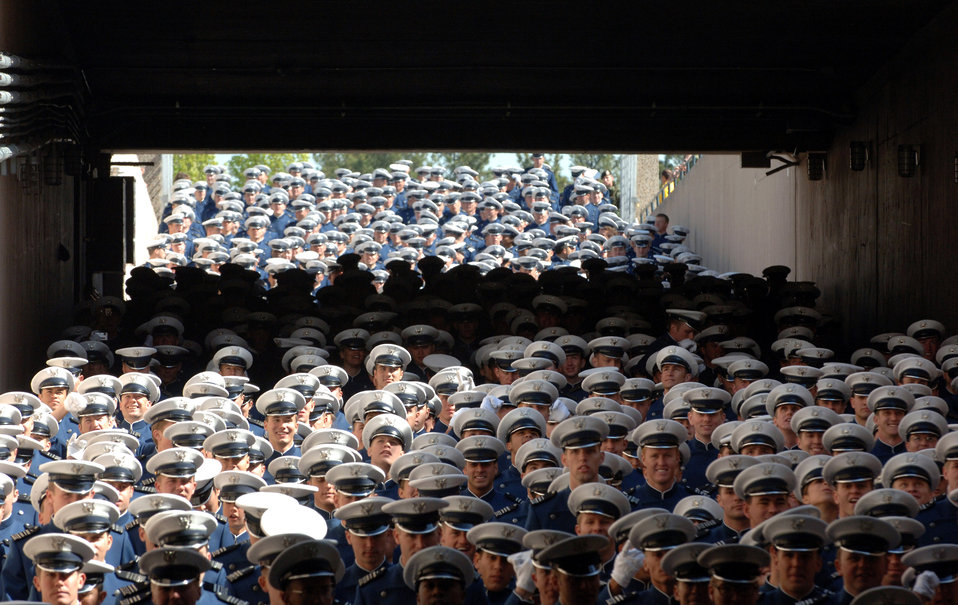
From cadet to lieutenant

The 977 members of the U.S. Air Force Academy Class of 2007 line up in the tunnel at Falcon Stadium prior to the commencement May 30 in Colorado. The ceremony marks the culmination of four years at the academy and their transition from cadet to the Air Force's newest second lieutenants.